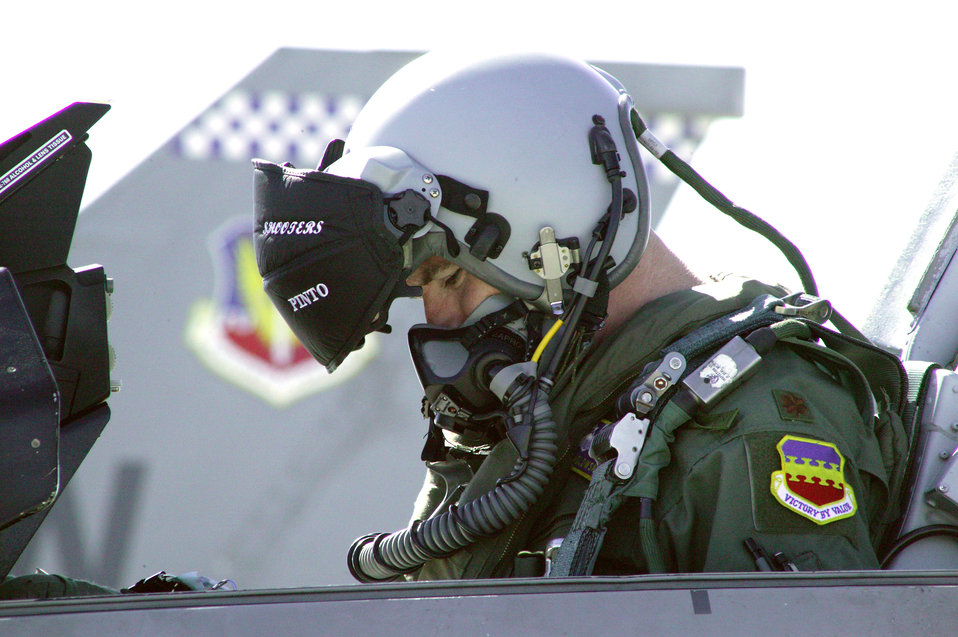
F-16 Fighting Falcon covers multiple missions

Maj. Mike Sadlowski performs pre-flight checks before taking off Wednesday, March 15, 2006, at Shaw Air Force Base, S.C.